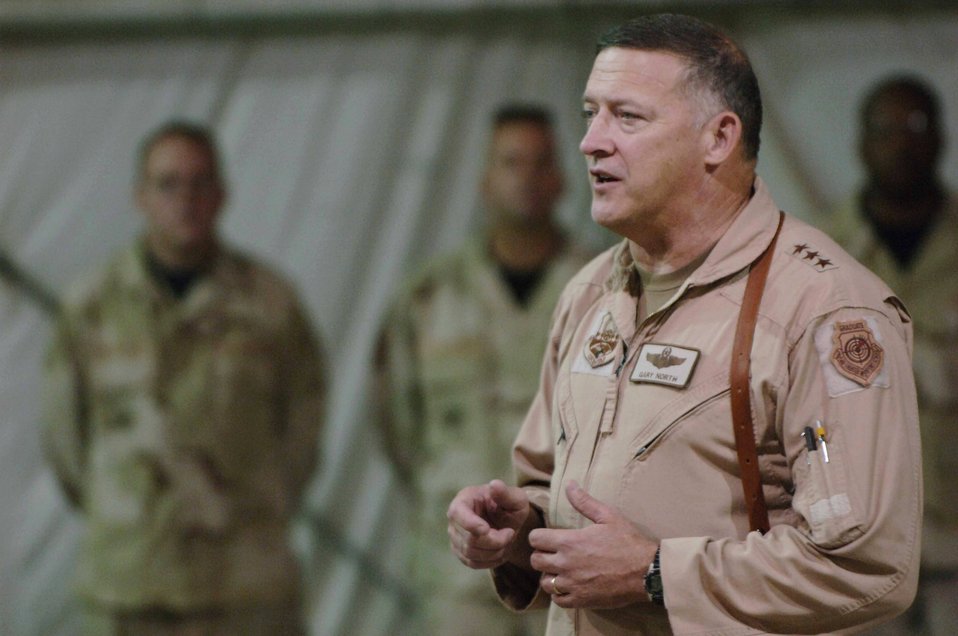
CENTAF commander meets with U.S. troops in Afghanistan

Lt. Gen. Gary L. North speaks to Airmen during his visit to Bagram Airfield, Afghanistan, Oct. 8. General North is the commander, 9th Air Force and U.S. Central Command Air Forces.